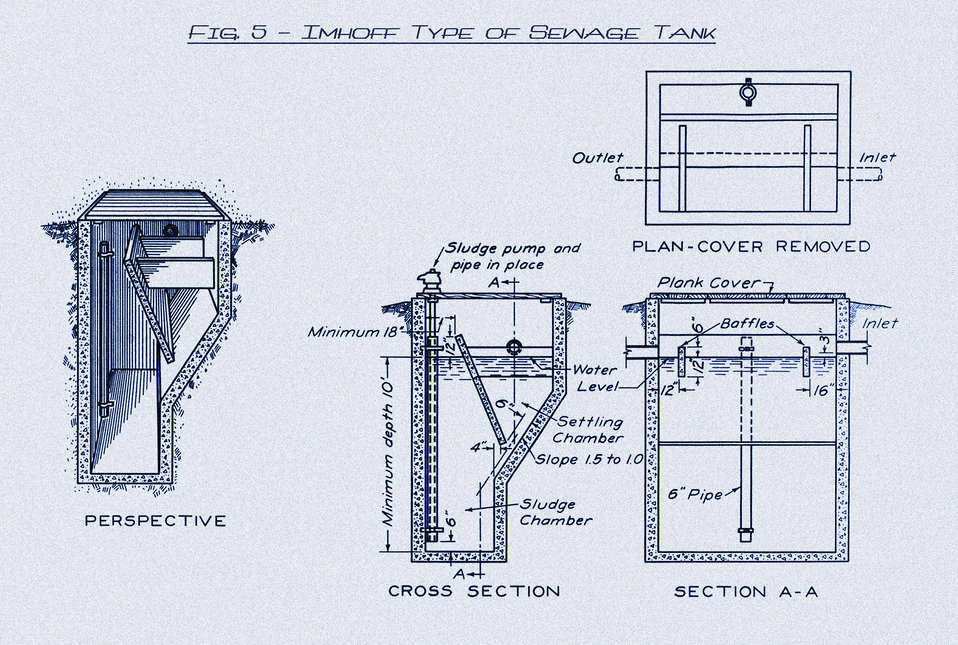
This historic diagram, which had been digitally enhanced and colorized, depicted an Imhoff sewage treatment tank from both an anterior cross-sectional perspective, as well as using an orthographic projection, which revealed the tank's chambers. It also explained the capacity of this design to serve the needs of pupils at an average public school in Minnesota. The Imhoff tank was a chamber created to receive, and process raw sewage. At its essence, it was a two-story septic tank. It collected sewage in the upper chamber in which sedimentation took place. The solids fell down sloped inclines to a bottom chamber in which the sludge was collected and digested by bacteria.